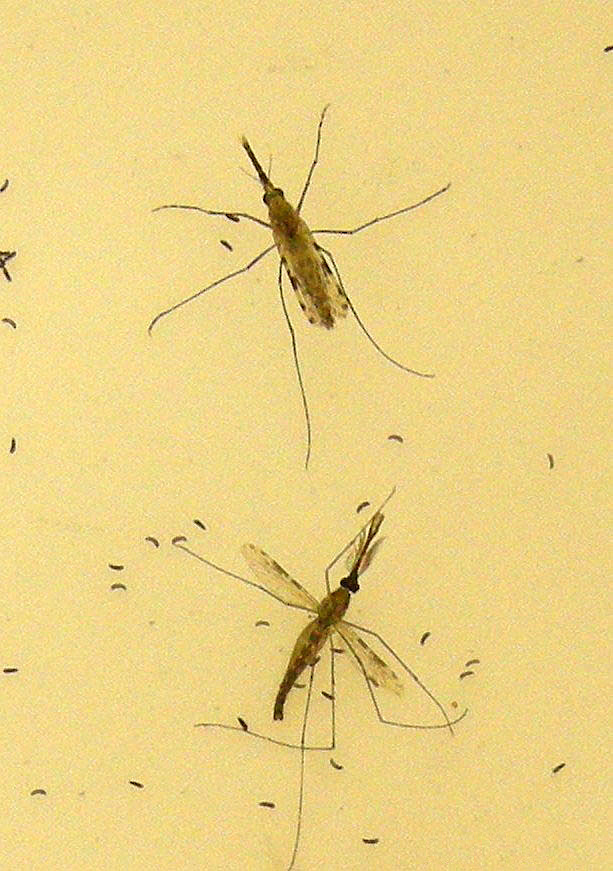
This photograph depicts two Anopheles gambiae mosquitoes as the female at the top of the image, was in the process of egg-laying atop a sheet of egg paper. The male is at the bottom of the image. A. gambiae is the principal vector of malaria in Africa.